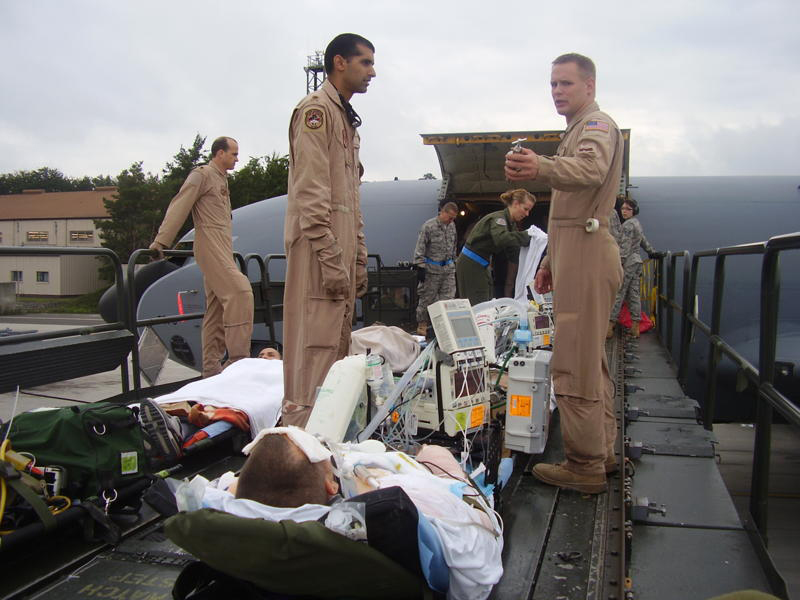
Air care

Tech. Sgt. Corey Hellmann (right), a reservist from the 920th Aeromedical Staging Squadron at Patrick Air Force Base, Fla. discusses the best way to load a critical care patient onboard an awaiting Air Force transport aircraft for medical evacuation from Bagram Airfield, Afghanistan. Sergeant Hellmann volunteered to deploy as a part of a critical care air transport team. The CCAT and aeromedical evacuation teams comprise highly specialized nurses, physicians, medical technicians and respiratory therapists charged with patient care during medical flying missions out of the war zone.